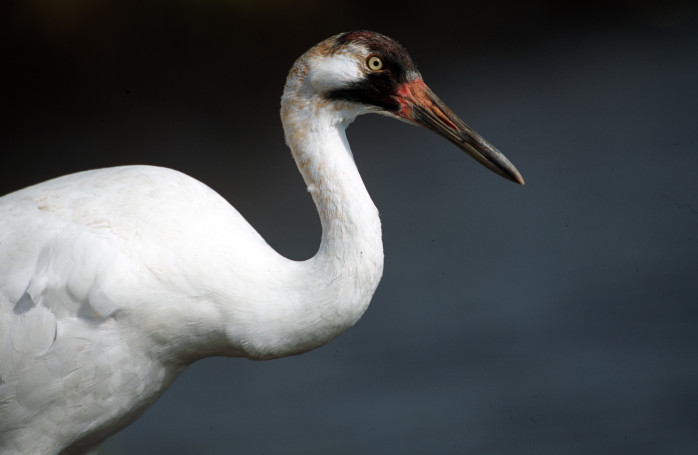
Endangered Whooping Crane (Grus americana)

This juvenile whooping crane has almost all of its adult feathers and coloration.